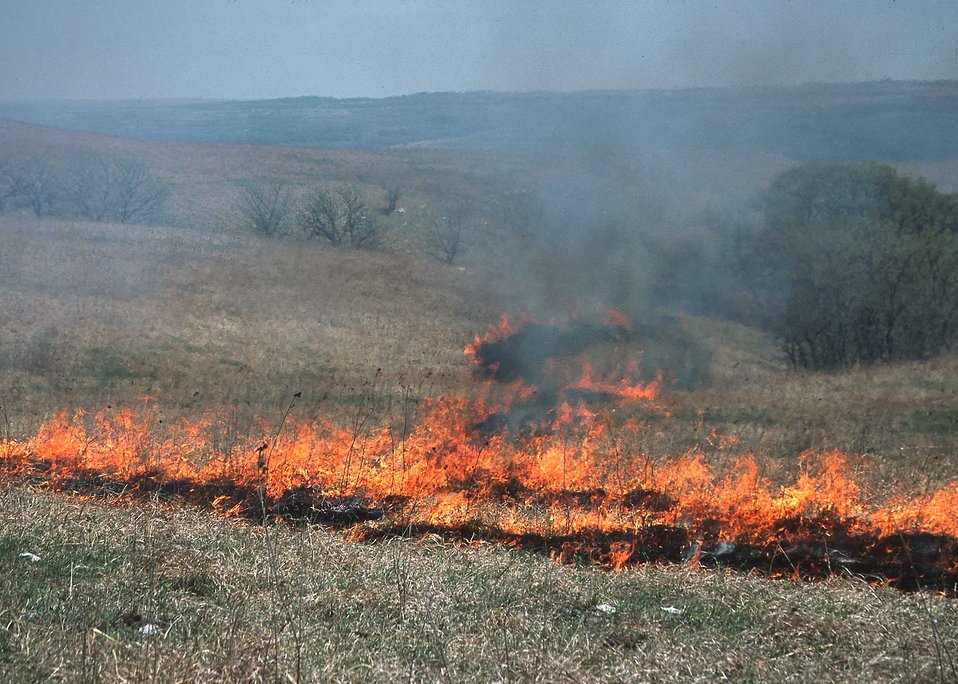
Prairie burn to stimulate new growth and recycle nutrients. Konza Biological Research Station, Manhattan, KS.